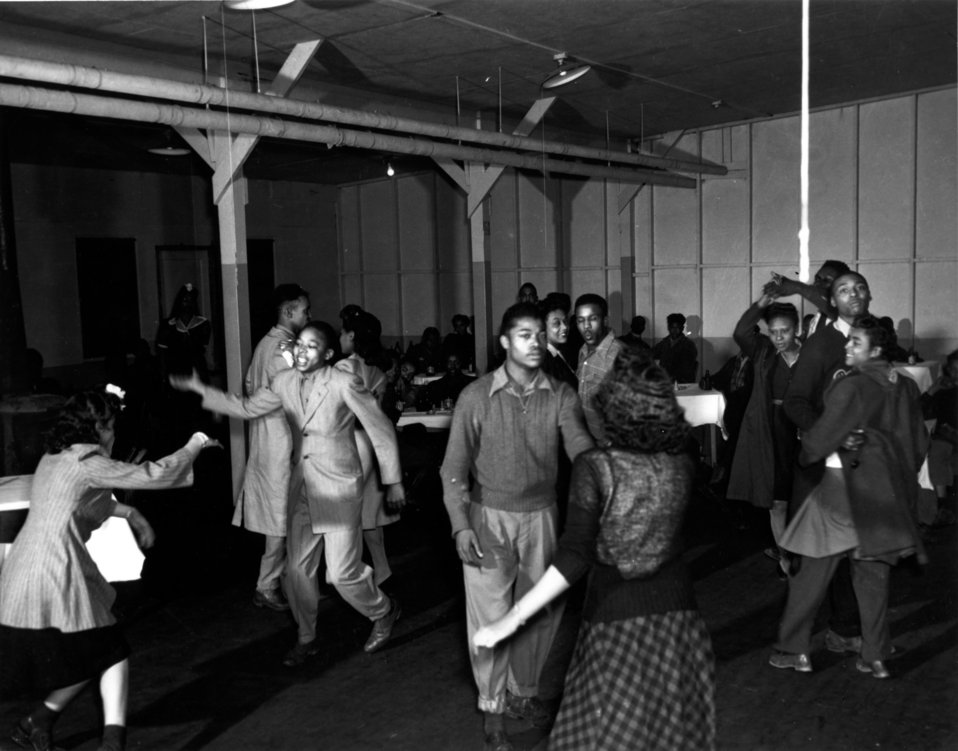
Recreation at Oak Ridge